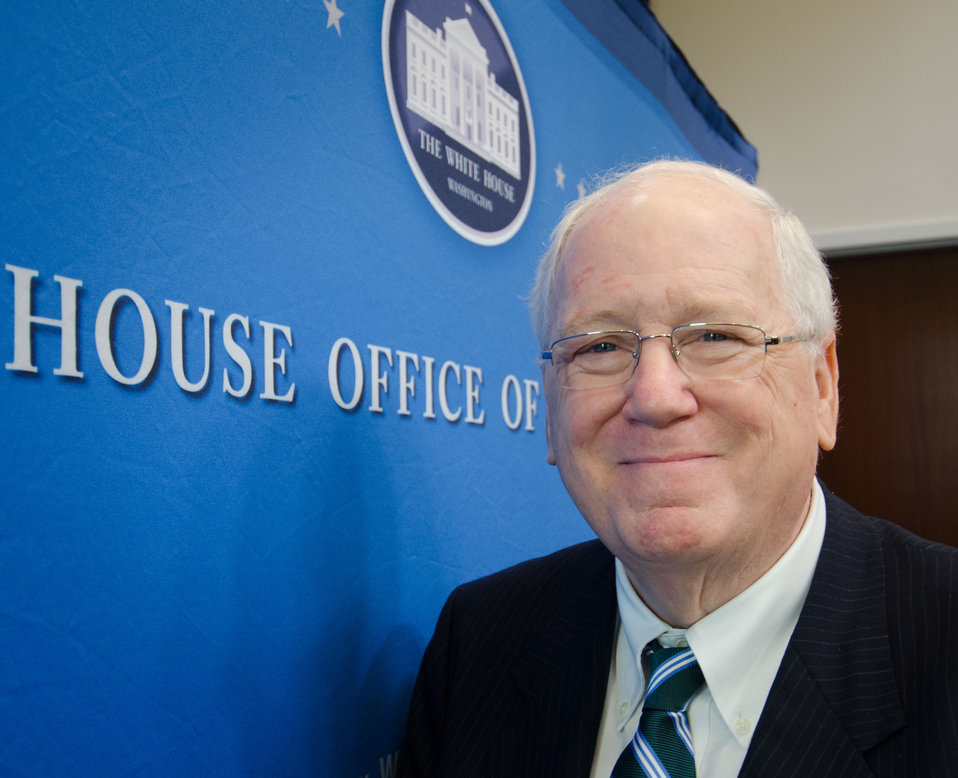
Former U.S. Ambassador to Cambodia and President of the World Food Prize Foundation Kenneth Quinn is one of eleven honorees recognized for his efforts to reduce hunger and increase food security in the U.S. and internationally at the White House Champions of Change Strengthening Food Security at Home and Abroad Event held at the White House on Thursday, September 6, 2012, in Washington, D.C.